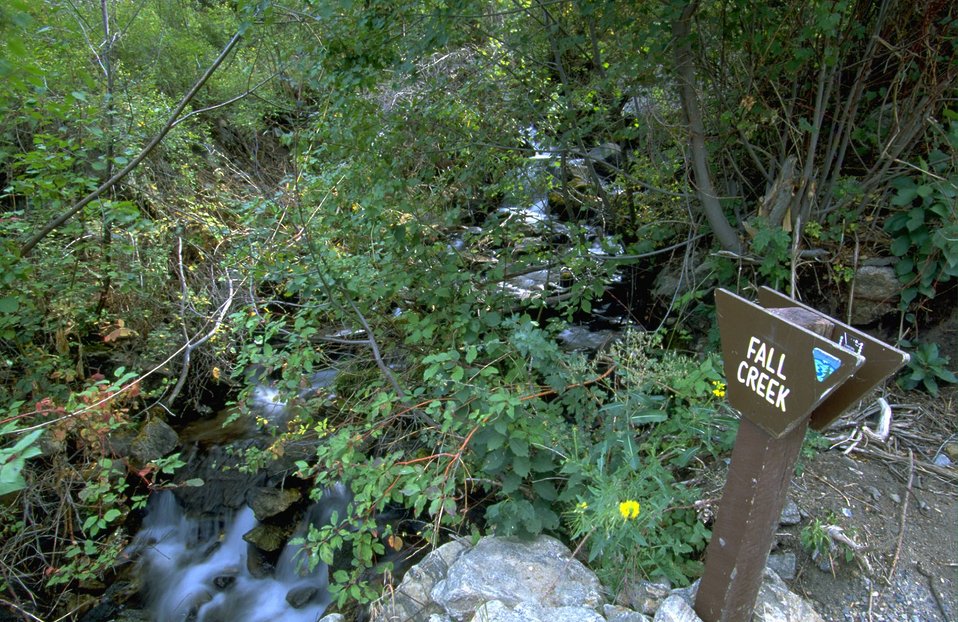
Fall Creek Foliage and Sign